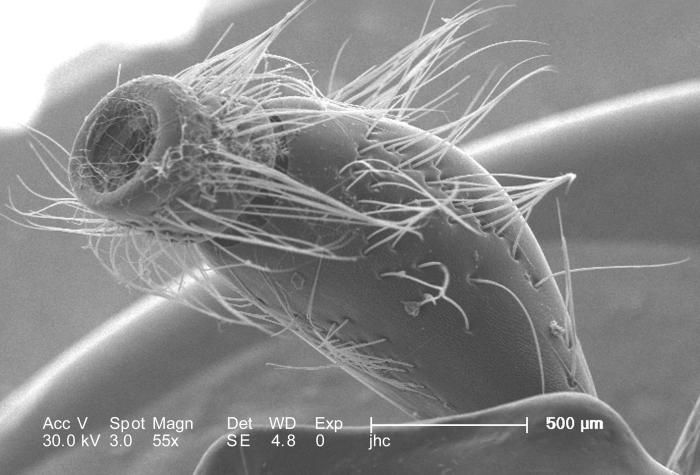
Under a low magnification of 55X, this scanning electron micrograph (SEM) depicted some of the exoskeletal morphologic characteristics displayed on the head region of an unidentified beetle found deceased in the suburbs of Decatur, Georgia. In this particular view, the first two segments of one of this insect's two antennae were visible, for the remaining antennal segments had been broken off.Created at the fracture point, was a cup-like cavitation, into which would have fit this organ's most proximal flagellar segment.The antenna is composed of three main regions: scape, pedicle, and flagellum. The scape, which is not visible in this view, attaches the sensory organ to the head region, and the pedicle joins the distal, jointed, multisegmented flagellum to the scape.